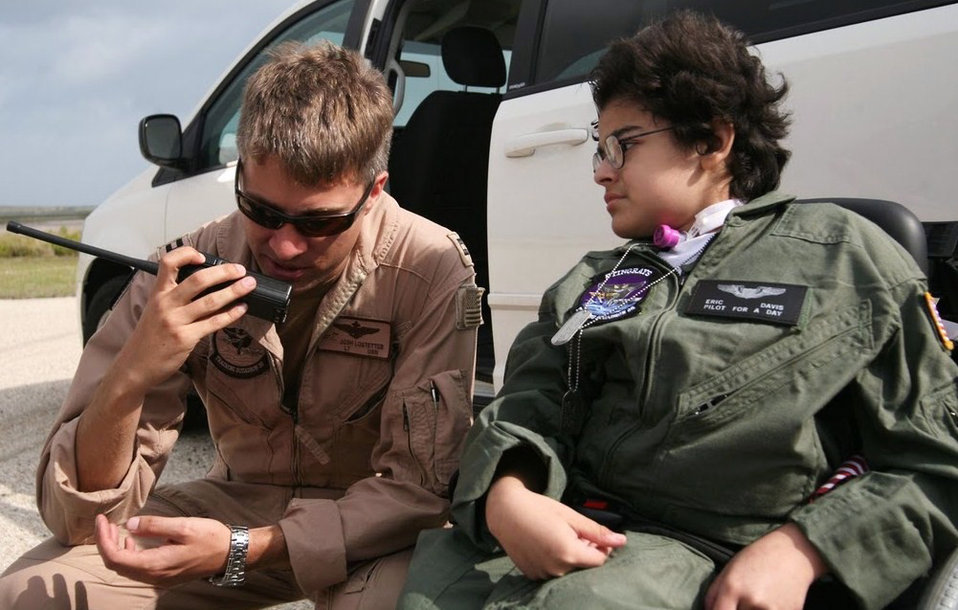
Pilot fo a Day at Barksdale AFB

Pilot for a Day participant Eric Davis (right) listens as Navy Lt. Josh Lostetter talk to pilots in the cockpit of a B-52 Stratofortress as it flies over the runway May 1, 2010, at Naval Air Station Corpus Christi, Texas.